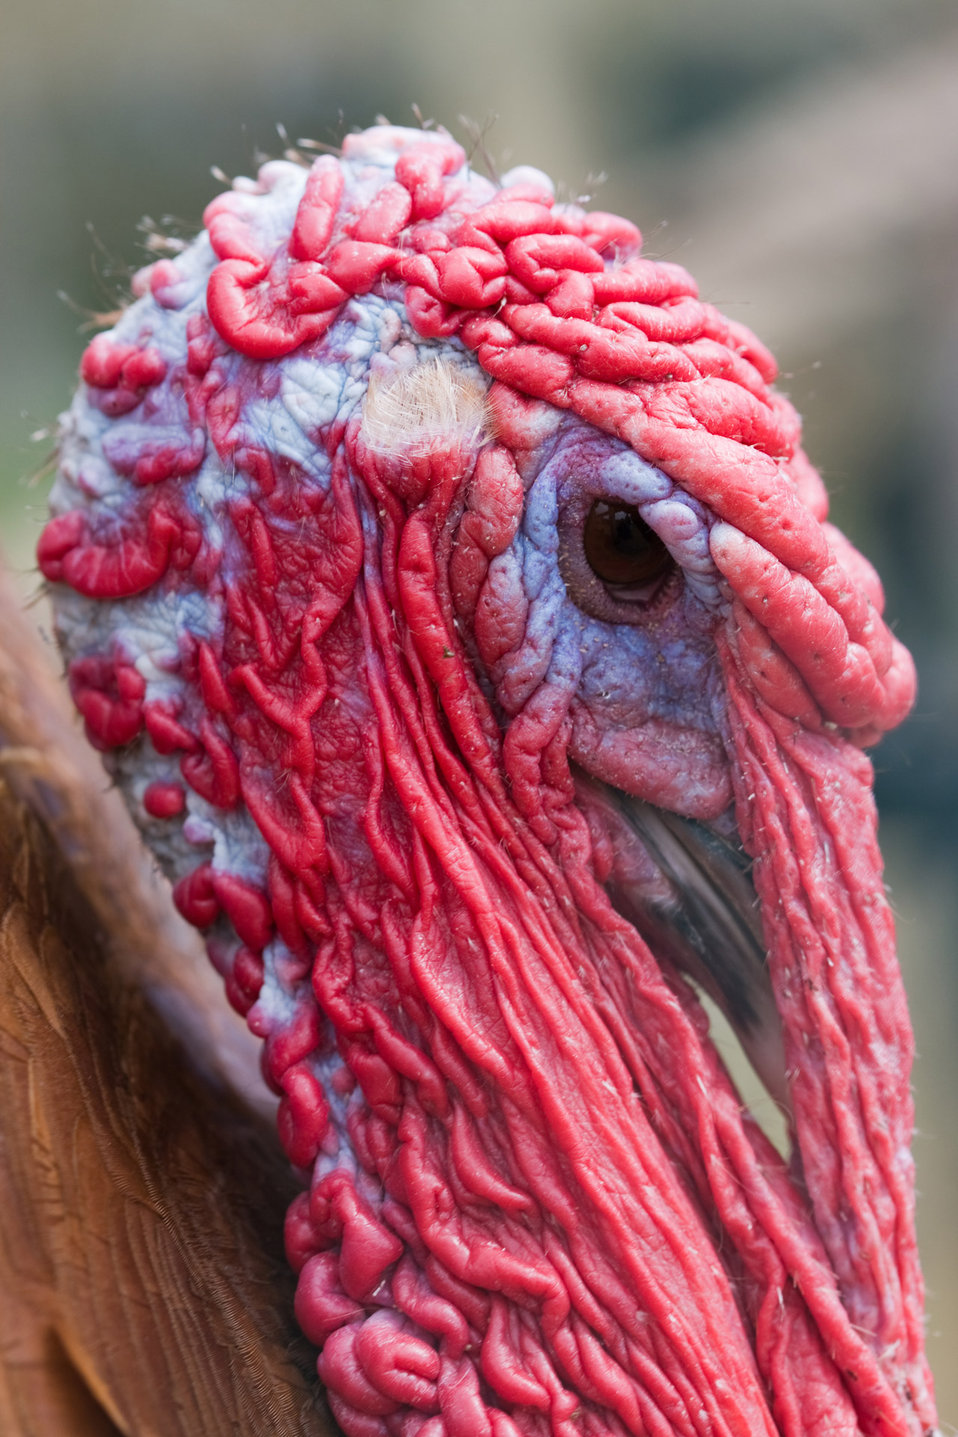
Turkey bird head close-up

Close-up macro of the head of a domestic turkey bird.